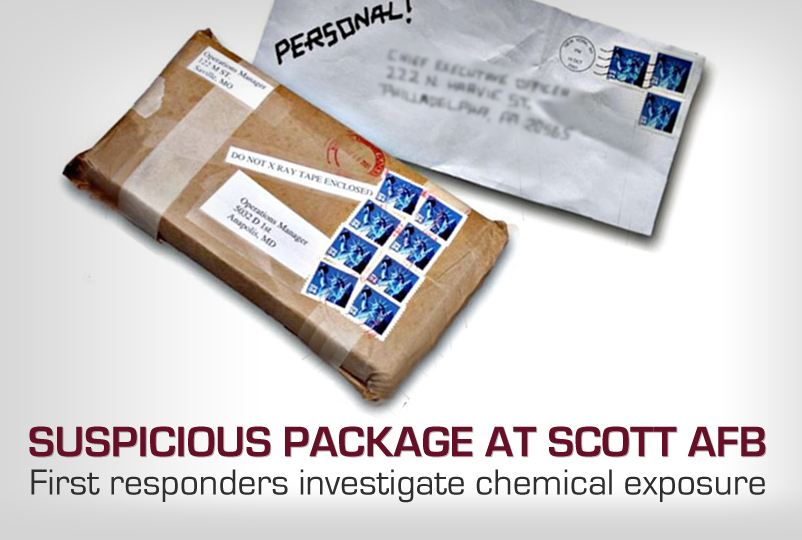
Scott AFB responds to a suspicious package